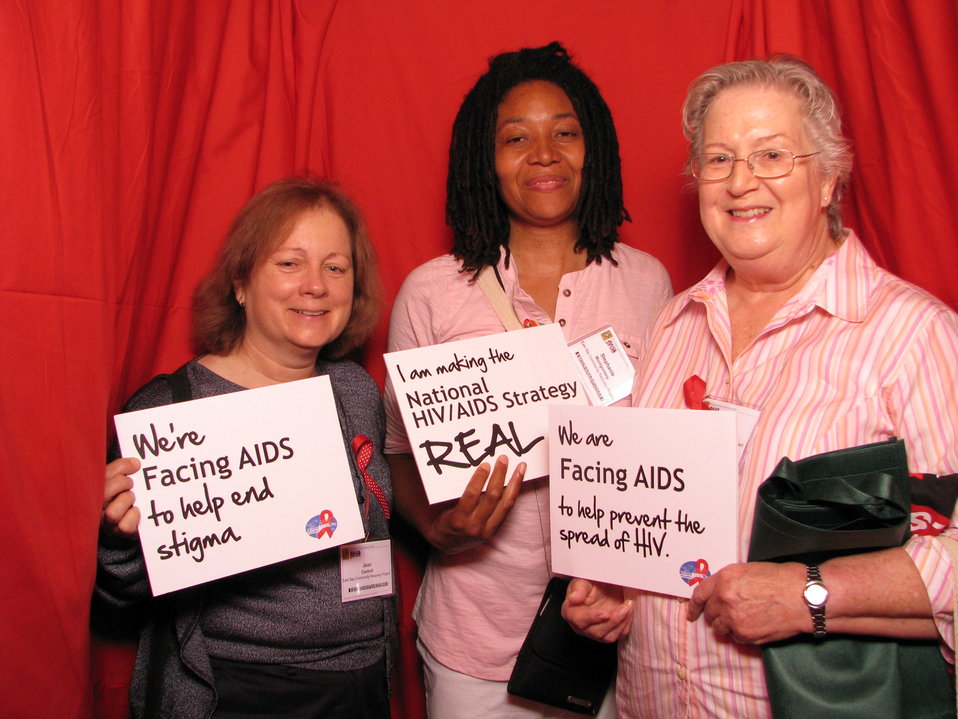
Were FACING AIDS to help end stigma. We're FACING AIDS to help prevent the spread of HIV.

From the AIDS.gov photo booth at the U.S. Conference on AIDS, September 2010 (Orlando, FL).